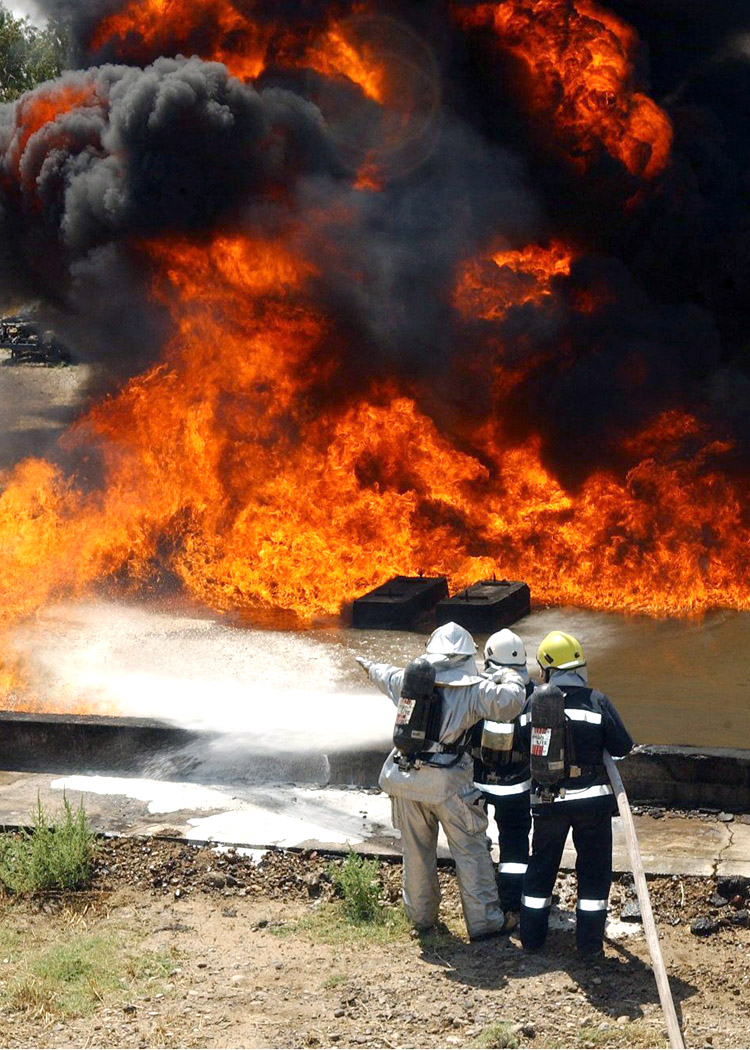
U.S. Airmen teach Iraqi volunteers to battle blazes

Firefighters from the 506th Expeditionary Civil Engineer Squadron and the Iraqi Air Force battle a pit fire during training at Kirkuk Air Base, Iraq.